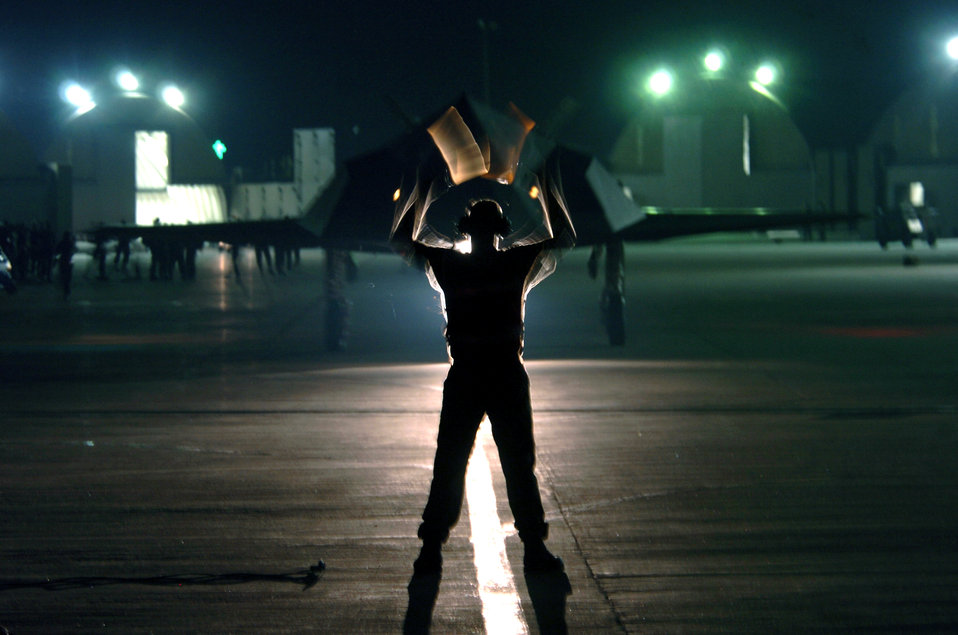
Stealth night ops

KUNSAN AIR BASE, South Korea - Staff Sgt. Brian Hennard marshalls an F-117 Nighthawk during night operations here Aug. 20. Sergeant Hennard is a crew chief deployed from the 49th Maintenance Squadron at Holloman Air Force Base, N.M.